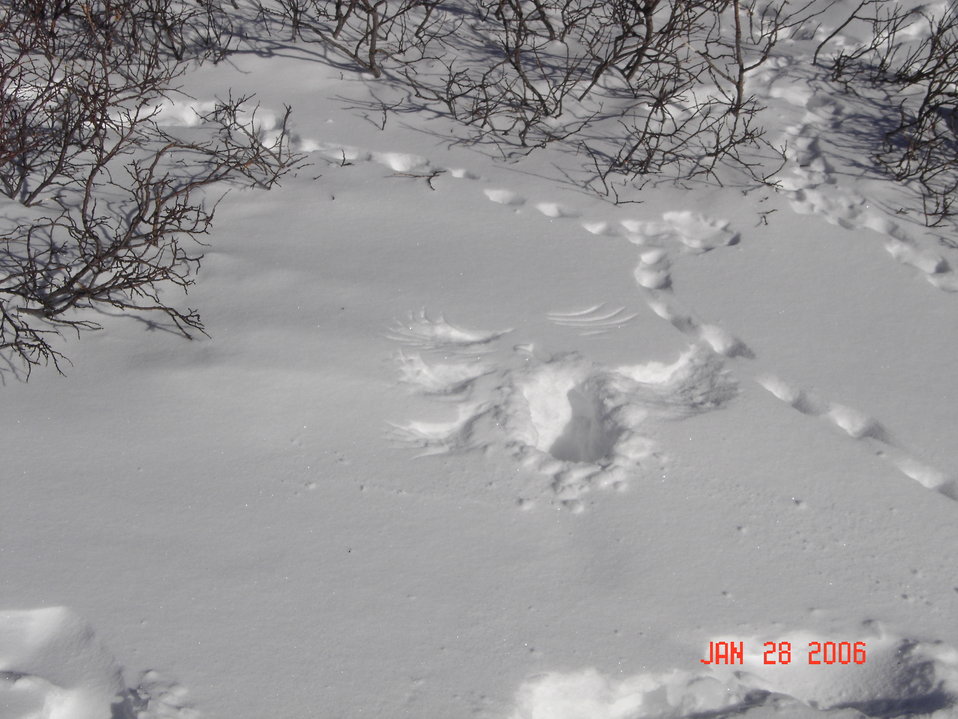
White-tailed Ptarmigan Snow Prints

Male and female white-tailed ptarmigan share similar body size, shape, and winter plumage, with adult body lengths up to 13.4 inches (34 centimeters) and body masses up to 0.9 pound (425 grams). Both the southern and Mt. Rainier white-tailed ptarmigan are white in winter and brown in summer, the feathers changing color with the seasons to camouflage the birds. Although the body feathers change color, the white-tailed ptarmigan is named for its perpetually white tail feathers, a morphological trait that distinguishes it from other ptarmigan species. During the winter, males and females are stark white and difficult to distinguish from the background of snow. In the summer during the breeding season, males turn a lighter color of brown or gray than females and develop a dark band of feathers on the breast that resembles a necklace.

During the winter, the southern and Mt. Rainier white-tailed ptarmigan feed on exposed willows above the snow and dig roosts, or burrows, into the soft snow as protection from wind and weather. During the summer, the white-tailed ptarmigan feeds on willows and other alpine vegetation. White-tailed ptarmigan require cool temperatures, rocky areas, soft snow, and the presence of willows. The southern and Mt. Rainier white-tailed ptarmigan spend their entire lifecycles in alpine habitats and are well adapted to survive in the cold, arid, and open alpine environments. Adaptations of the white-tailed ptarmigan to these alpine environments include its cryptic plumage, low metabolic rates, and heavily feathered feet that act as snowshoes.